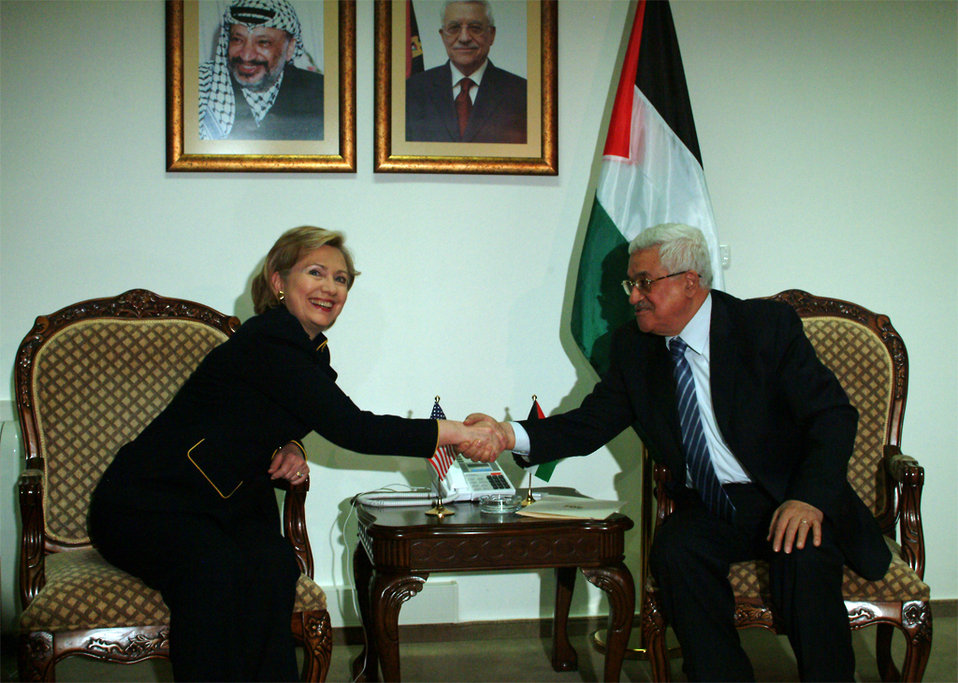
Secretary Clinton With Palestinian Authority President

Secretary Clinton with with Palestinian Authority President Mahmoud Abbas in Ramallah March 4, 2009.